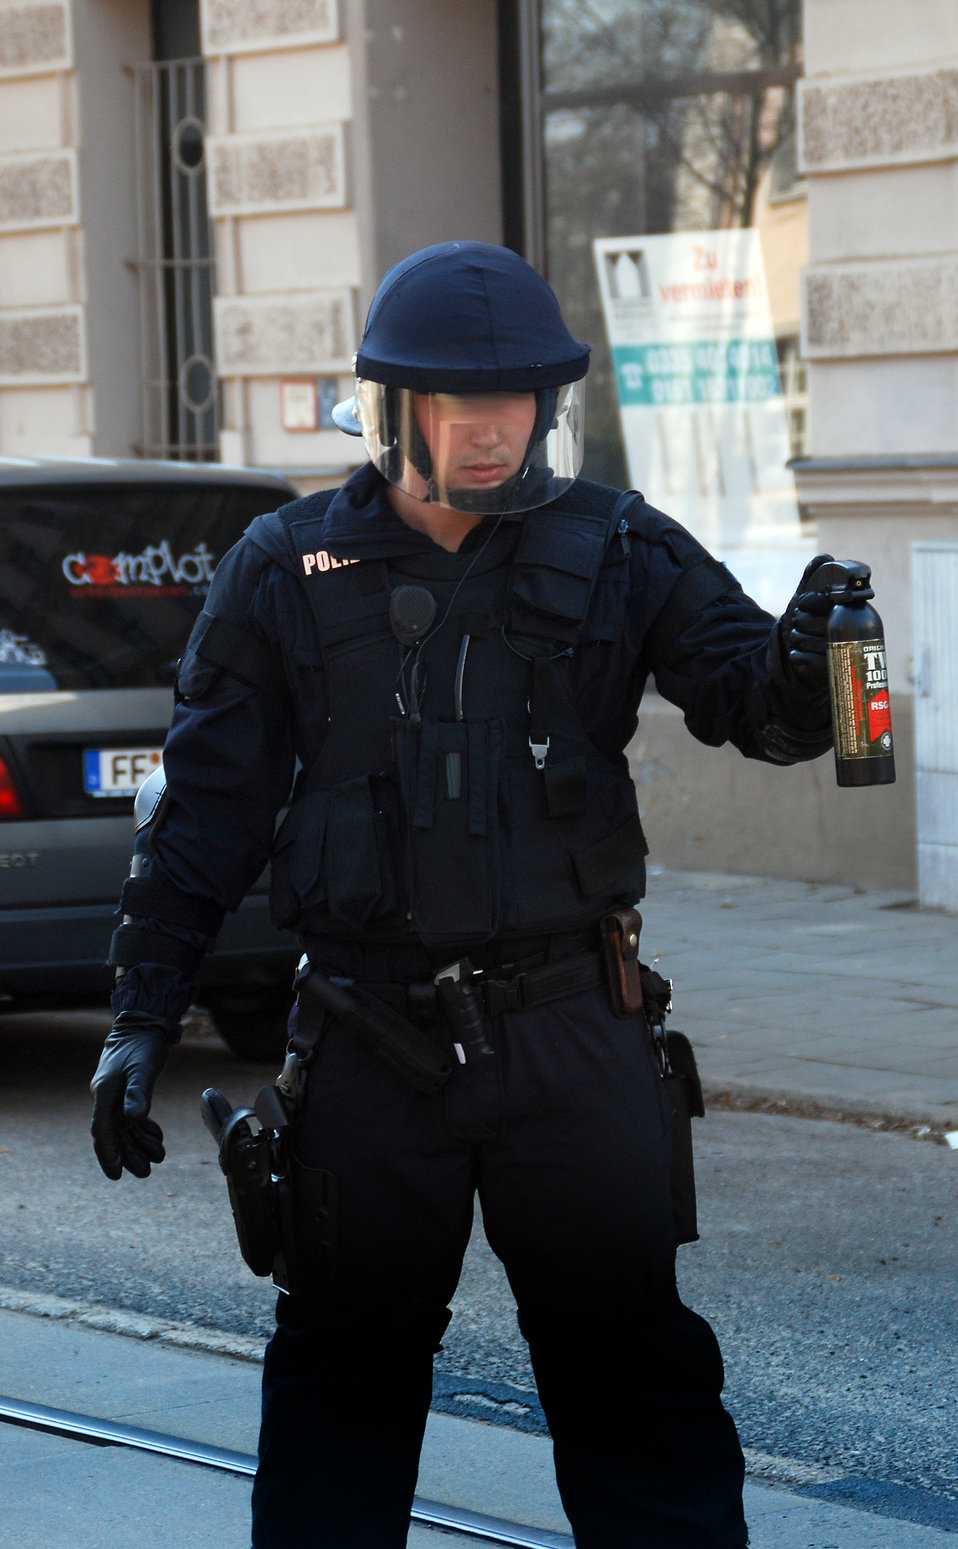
Proteste gegen den Nazi-Aufmarsch am 24.3.2012 in Frankfurt (Oder)